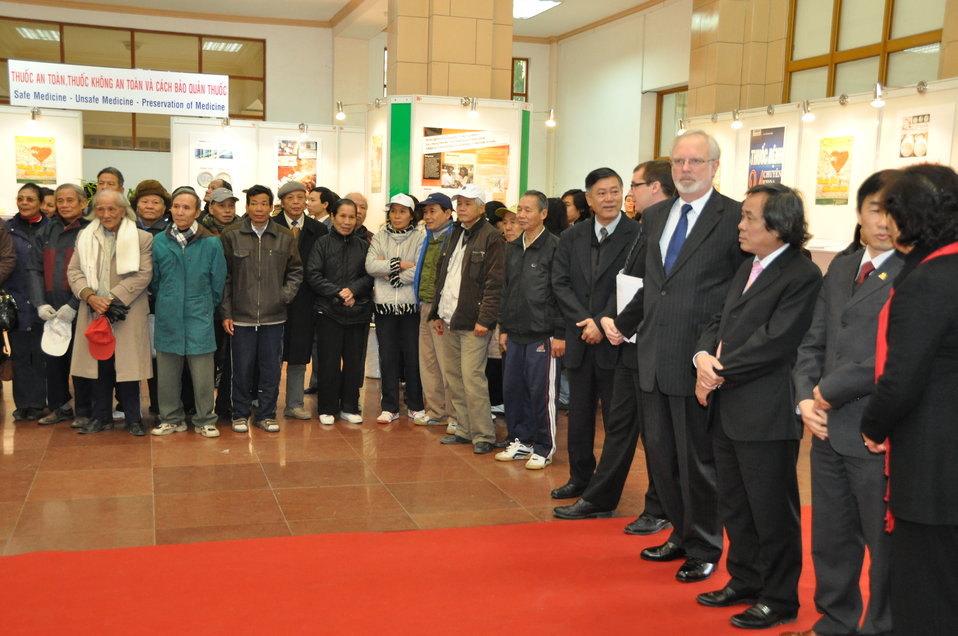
U.S. Ambassador David Shear opens safe medicine exhibition in Hanoi

Safe Medicine Exhibition